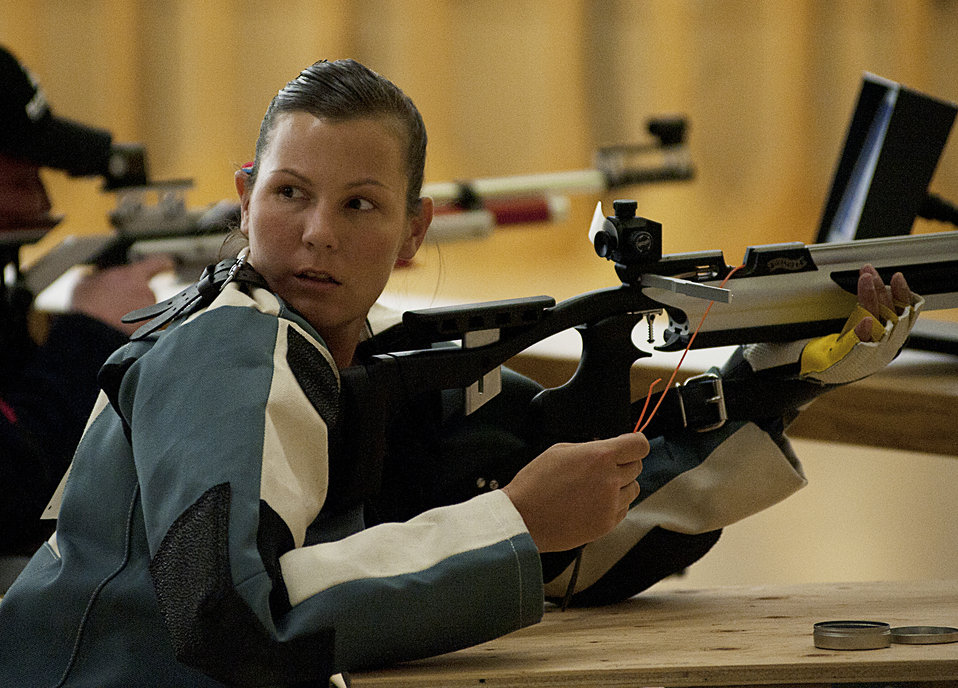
Warrior Games

Retired Staff Sgt. Stacy Pearsall looks at her coach before taking part in the finals of the rifle competition of the 2012 Warrior Games at the Olympic Training Center in Colorado Springs, Colo., May 3, 2012. Pearsall is with the Air Force team.